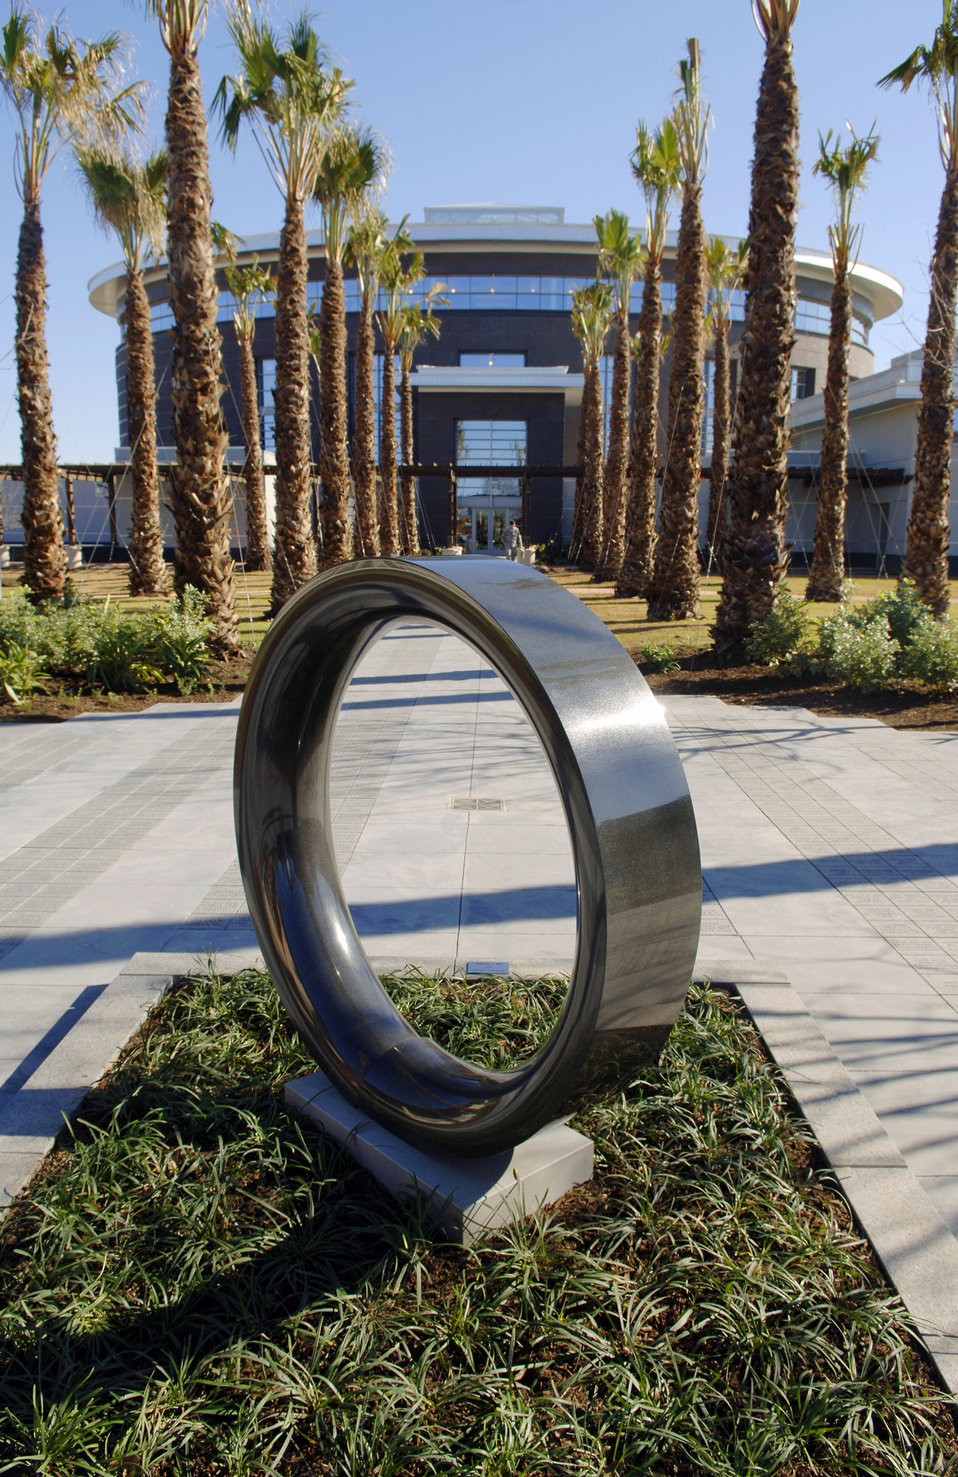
Center for Intrepid

The symbol of a broken ring, cracked but still intact, marks the entrance to the new Center for the Intrepid, a 65,000-square-foot rehabilitation center next to Brooke Army Medical Center in San Antonio.